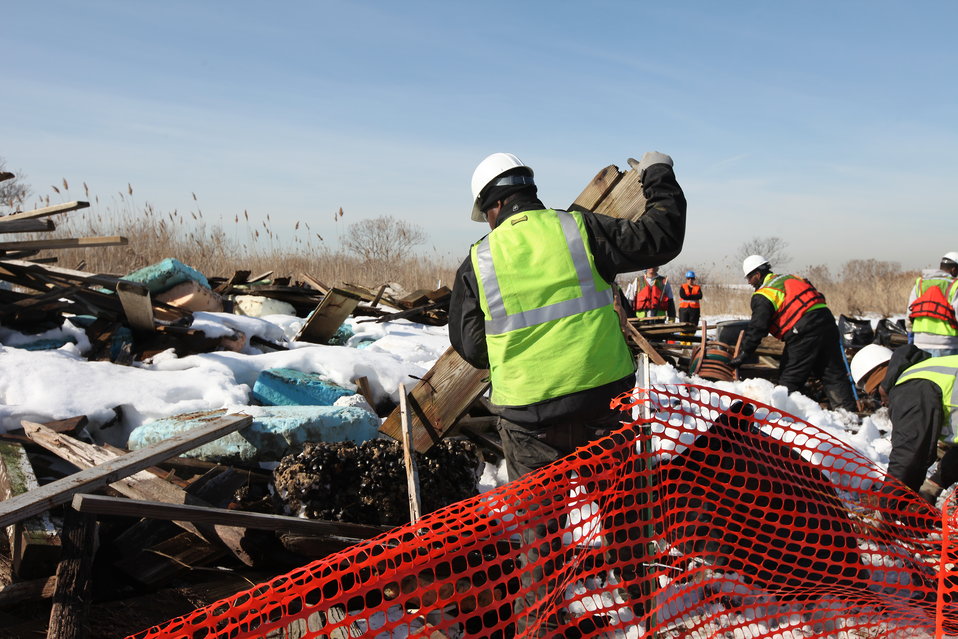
Ground crew stages debris for watercraft pickup at Lido Beach WMA.